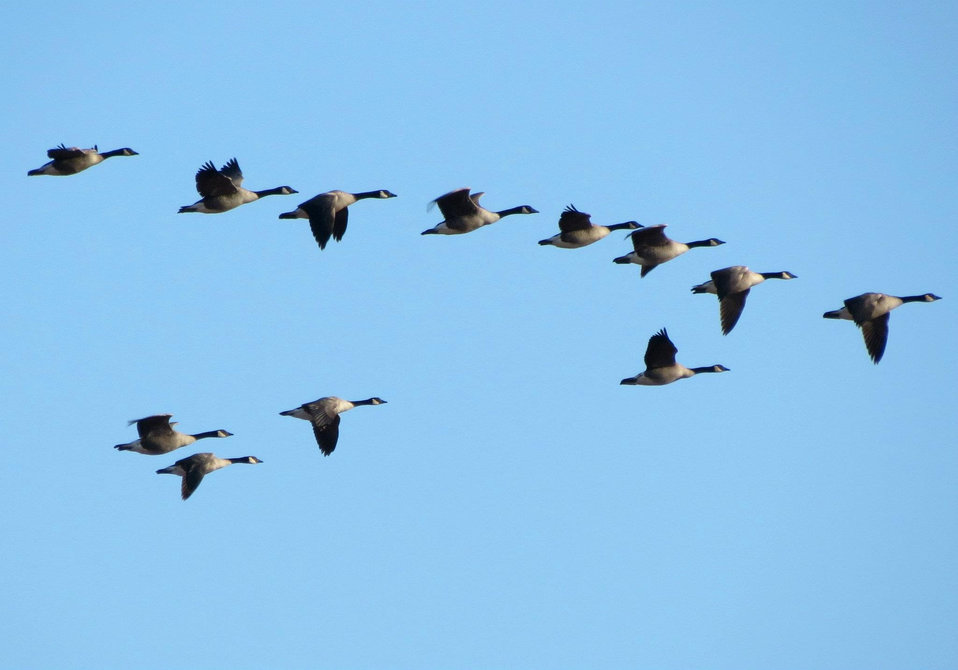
Canada geese

Port Louisa National Wildlife Refuge, IO
January 3, 2012